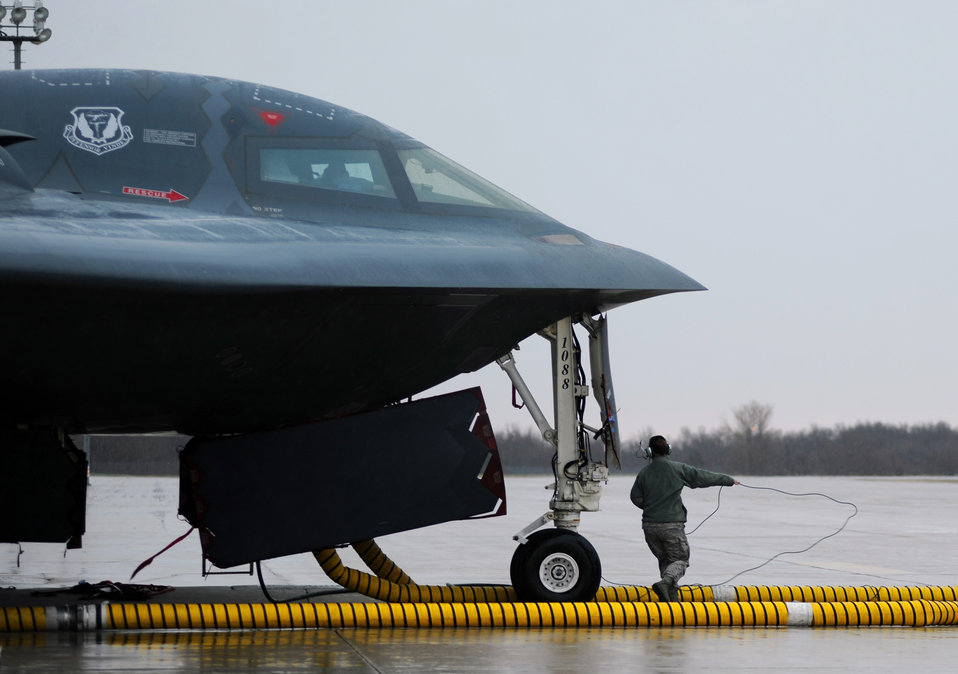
Operation Odyssey Dawn

WHITEMAN AIR FORCE BASE Mo. 509th Aircraft Maintenance Squadron, maintainers and crew chiefs, prepare B-2 Stealth Bombers for Operation Odyssey Dawn March 19, 2011.